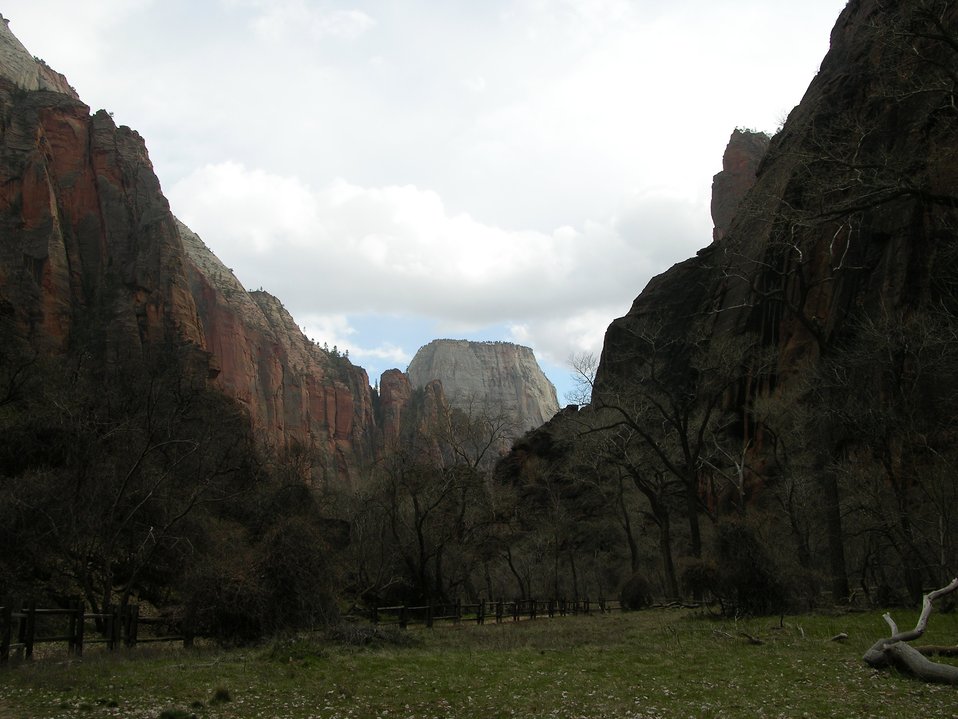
A view in Zion National Park